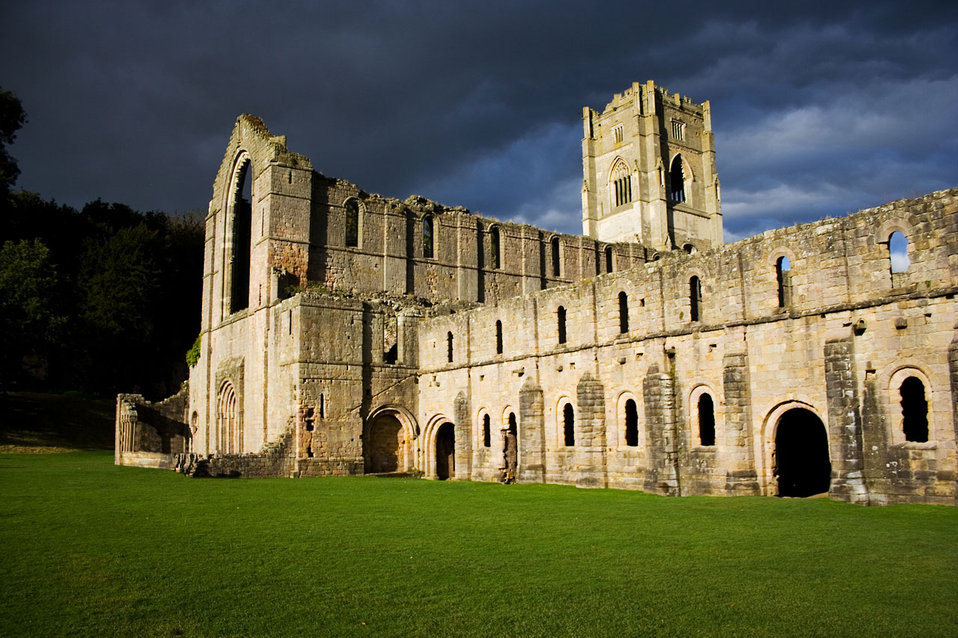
Fountains abbey

A dramatic picture of fountains abbey right before storm.